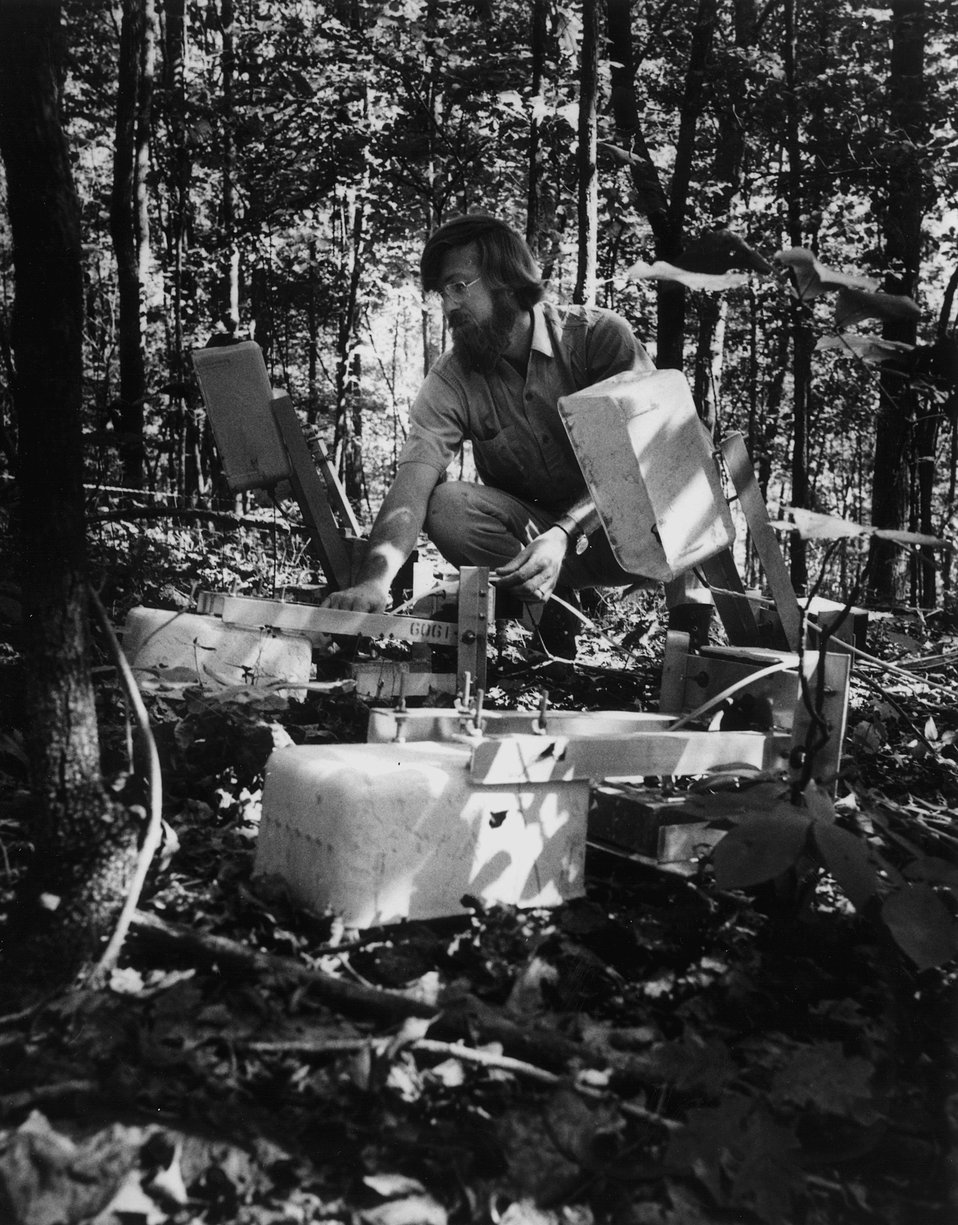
Carbon dioxide produced from the floor of a mixed deciduous forest is monitored by infrared analysis chambers (shown at left) that are remotely signaled to lower in sequence onto the forest floor at 10-minute intervals, trapping the carbon dioxide. c. 1974